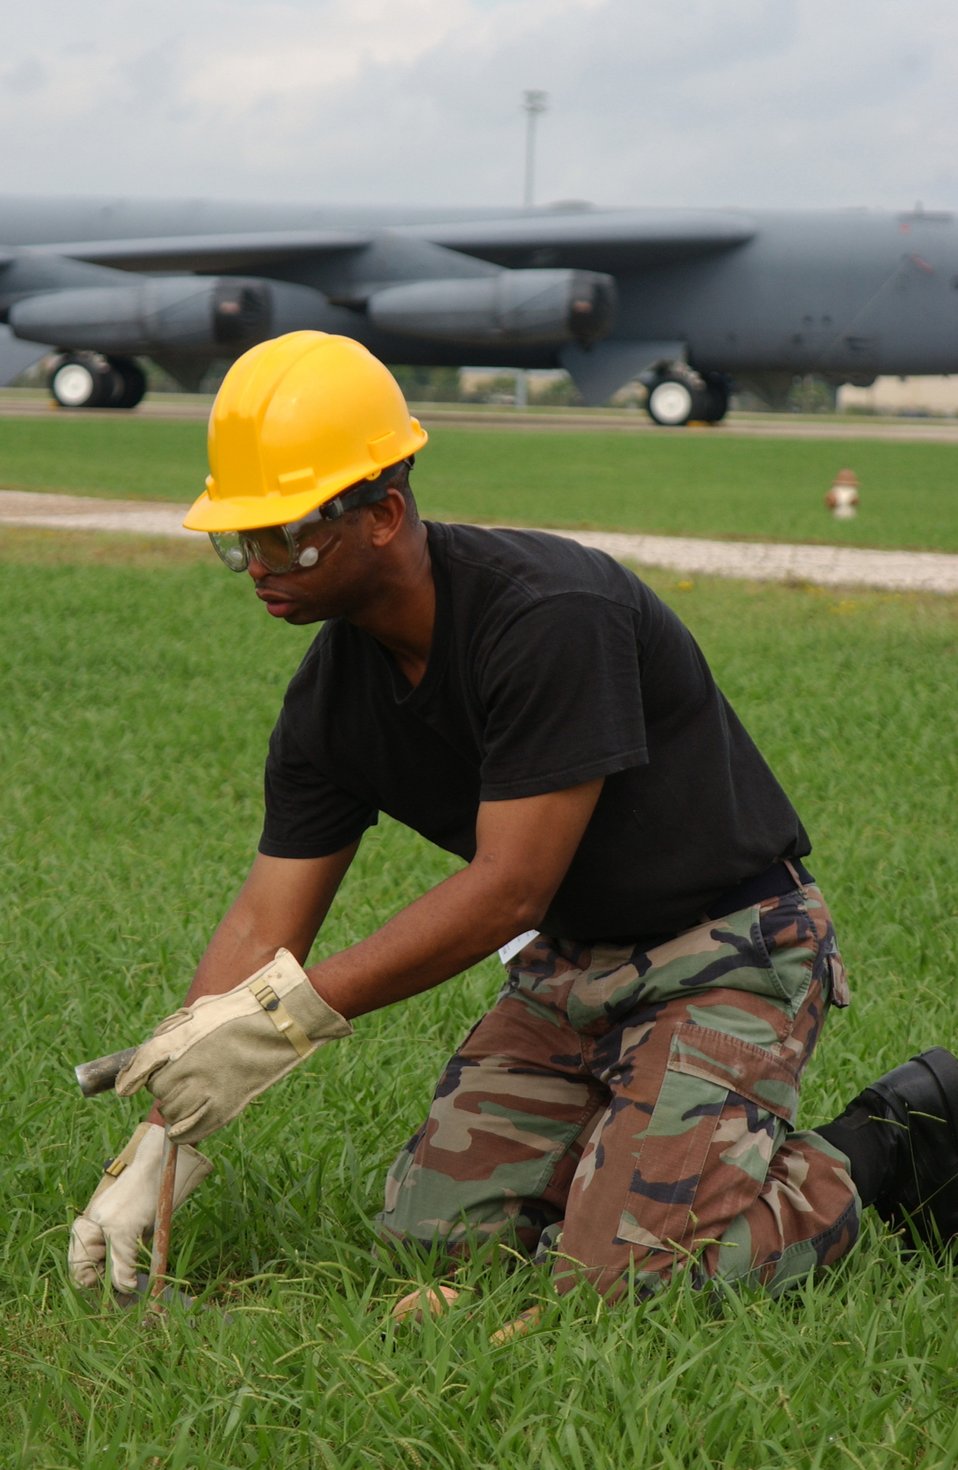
Securing the line

BARKSDALE AIR FORCE BASE, La. -- Tech. Sgt. Willie D. Anderson secures a tension line while setting up a high frequency antenna during an operational readiness exercise here Oct. 25. Sergeant Anderson is assigned to the 2nd Communications Squadron.